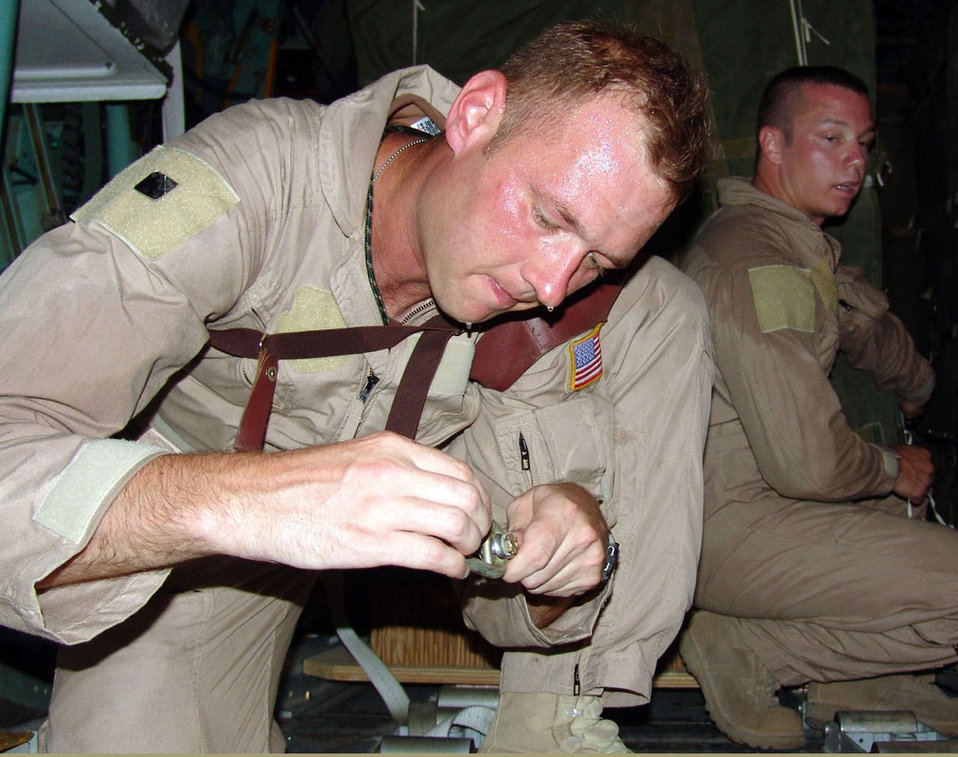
Airmen support Soldiers with airdrop

SOUTHWEST ASIA -- Tech Sgt. Scottie Turner (left) and Senior Airman David Sanders prepare a guillotine knife and Y-adapter extraction cable used for container delivery system airdrops. This airdrop mission delivered 48 bundles containing about 69,000 pounds of food rations for U.S. and Iraqi Soldiers engaged in combat operations against anti-Iraqi forces. The Airmen are loadmasters with the 737th Expeditionary Airlift Squadron at a forward-deployed location and are from Pope Air Force Base, N.C.